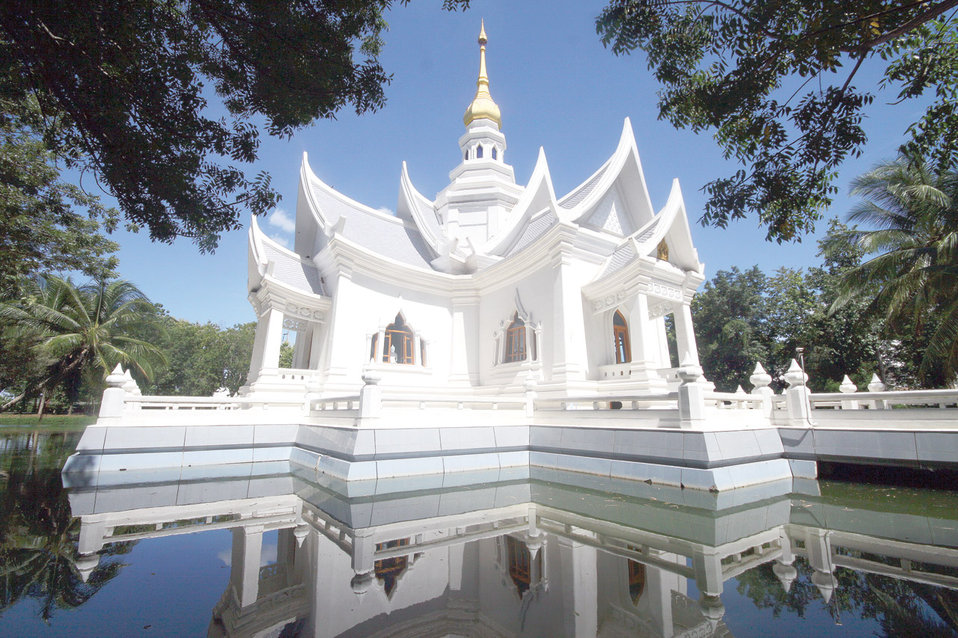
Meditation hall under the daylight

This is one of the most beautiful buildings. it has been used for meditation sessions and morning and evening chants.